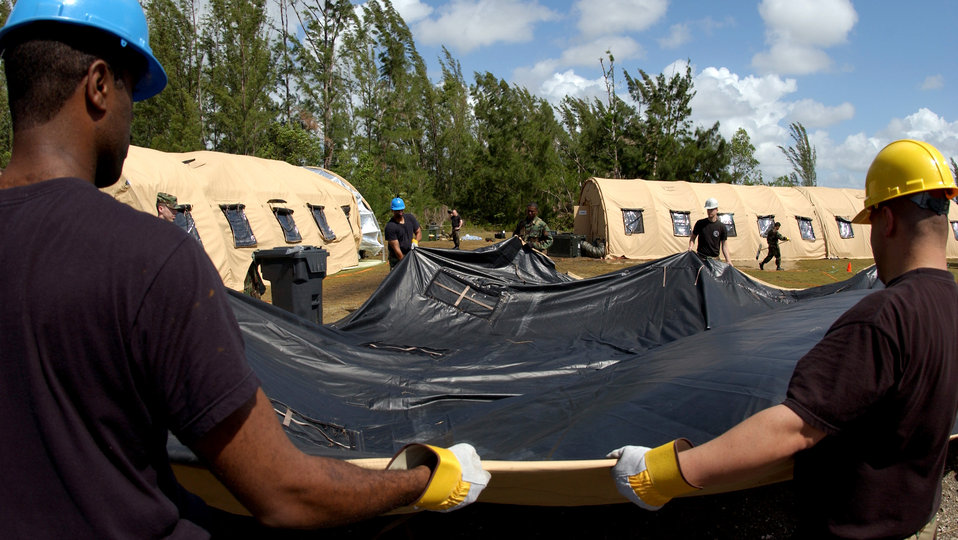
Jump Start

Airmen with the 514th Communications Squadron at McGuire AFB, N.J., set up a tent after heavy rainstorms flooded the location of Exercise Jump Start on Tuesday, April 11, 2006, at Homestead Air Reserve Base, Fla. The communications exercise is designed to familiarize troops from Reserve, Guard and active military units with equipment they wouldn't normally use. Airmen had to rebuild and relocate the tents.